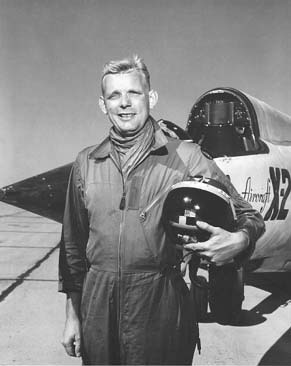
Captain Iven C. Kincheloe Jr.

1950's -- Captain Iven C. Kincheloe Jr. is pictured here with the X-2 rocket research plane. Kincheloe, the personification of the